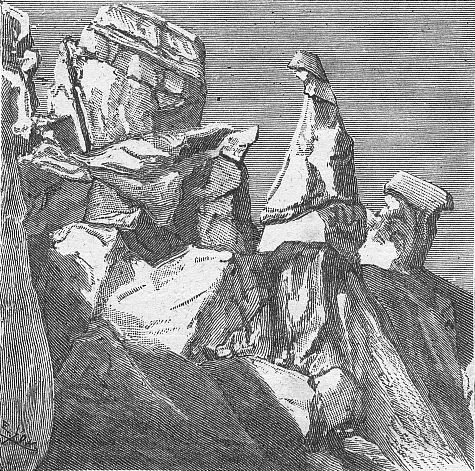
An illustration from Jules Verne's short story 'Quarantième ascension française au mont Blanc' (1871) drawn by Edmond Yon. Polski: Ilustracja opowiadania Juliusza Verne'a 'Quarantième ascension française au mont Blanc' (Czterdzieste francuskie wejście na Mont Blank , 1871) autorstwa Edmonda Yona. Français : Jules Verne: 'Quarantième ascension française au mont Blanc' (1871), dessins par Edmond Yon.